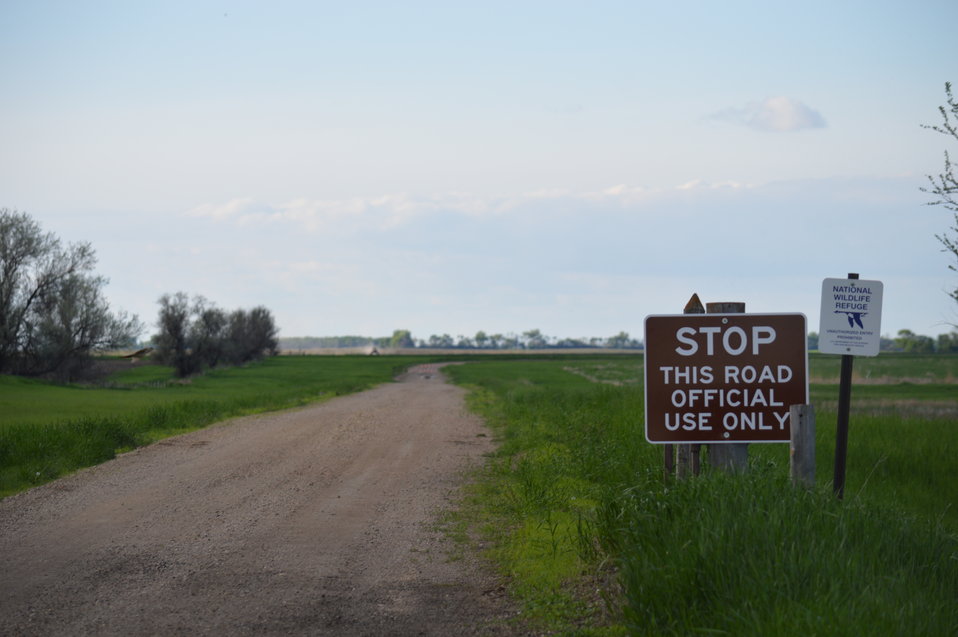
USFWS Service Road

Scenery and wildlife at Sand Lake National Wildlife Refuge in South Dakota